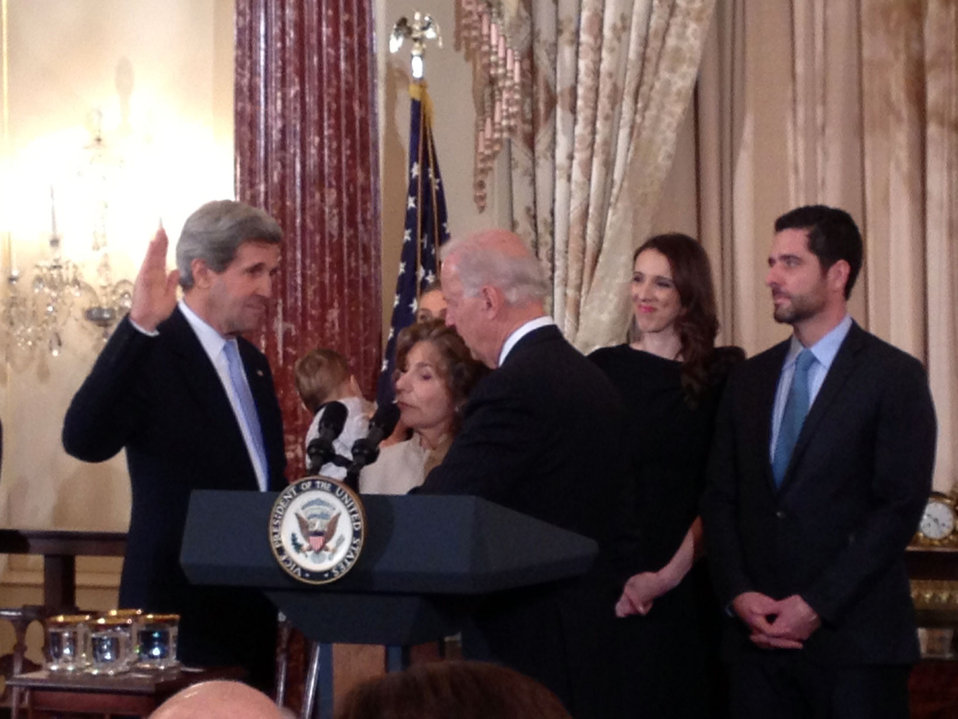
Vice President Biden Swears In Secretary Kerry

U.S. Vice President Joe Biden swears in Secretary of State John Kerry, surrounded by his family, at the U.S. Department of State in Washington, D.C., February 6, 2013.